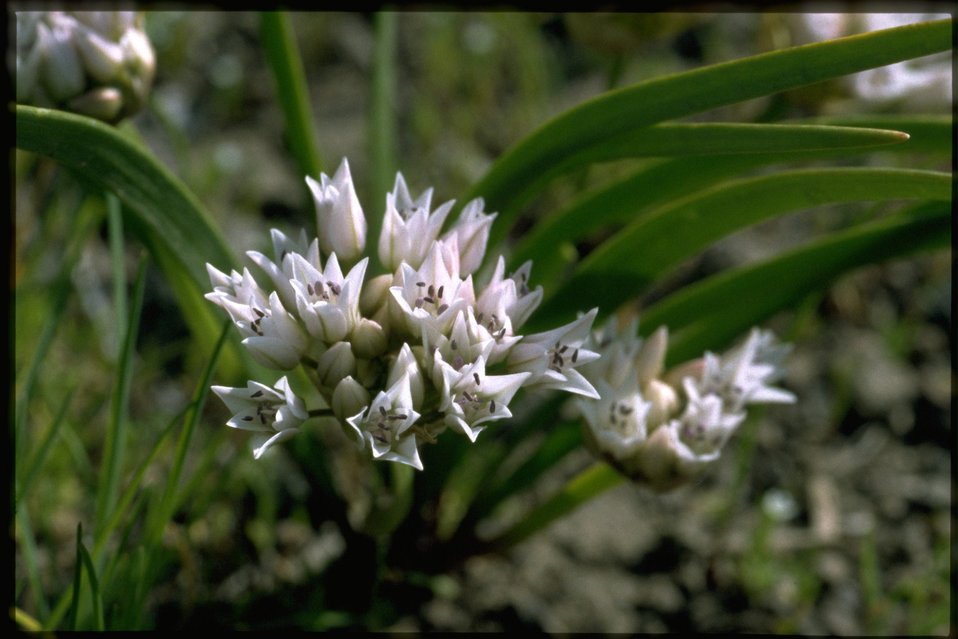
Closeup of Tolmie's Onion, Allium Tolmiei, wildflowers.